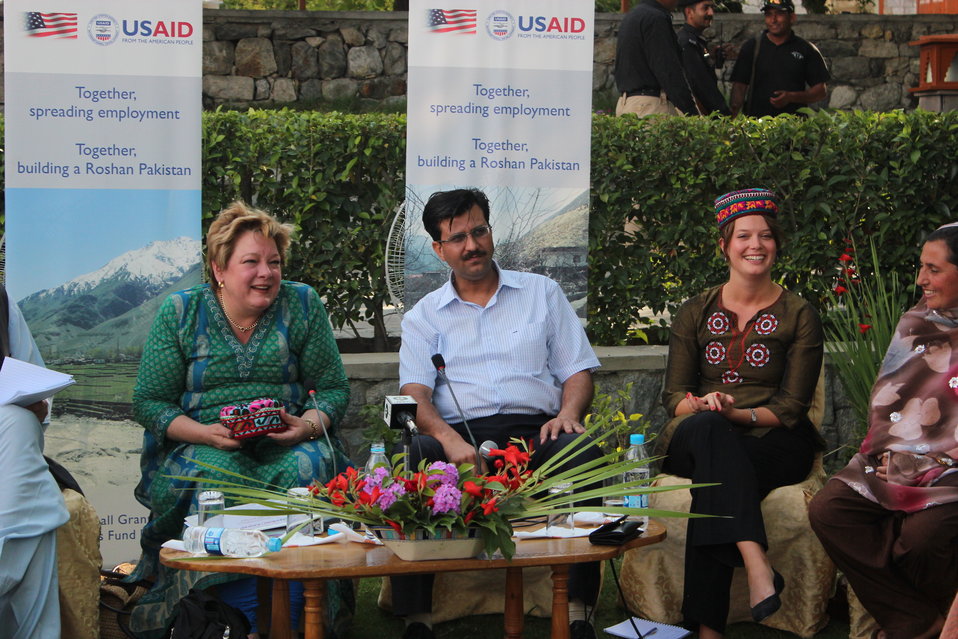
USAID Deputy Country Director Karen Freeman met with 6-8 beneficiaries from Gupis Rural Support Program

On Sunday, USAID Deputy Country Director Karen Freeman met with 6-8 beneficiaries from Gupis Rural Support Program to learn about their project funded by a USAID grant. The meeting took place at Serena Hotel in Gilgit.